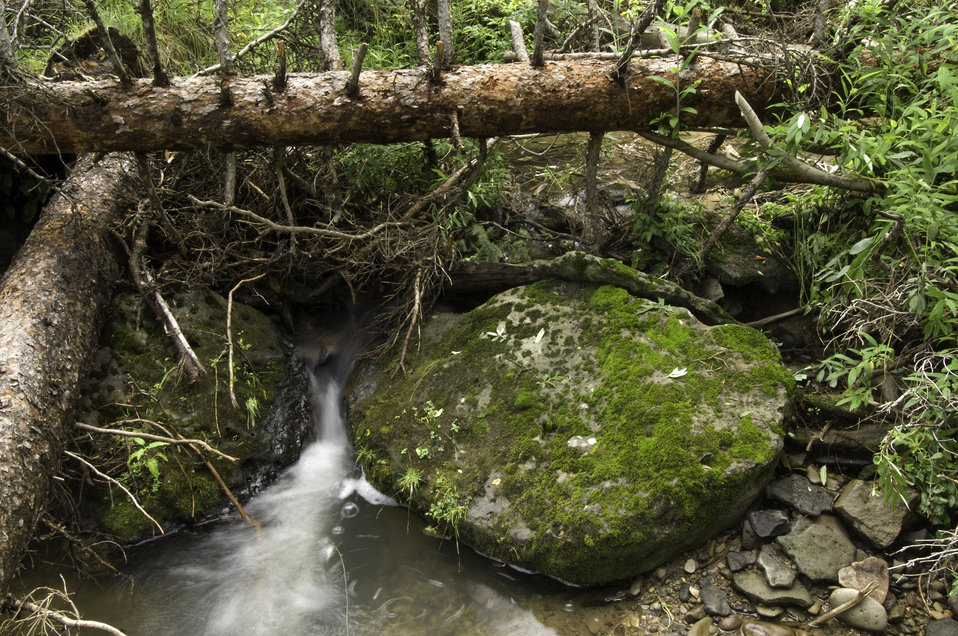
Stream crossings by roads can pose serious threats to fish ecosystems. The cumulative effect of culverts, fords, and other structures throughout a stream channel can significantly change the streams geomorphology (study of the characteristics, origin, and development of landforms) and impair fish passage by blocking valuable spawning and rearing habitat. The U. S. Department of Agriculture (USDA) Forest Service’s (FS) Aquatic Organism Passage (AOP) project is to identify the stream crossings in National Forests that have poorly designed crossings and replace those crossings to improve water quality and native habitat. This photo was taken in the White River National Forest, Glenwood Springs, Colorado on August 17, 2007.